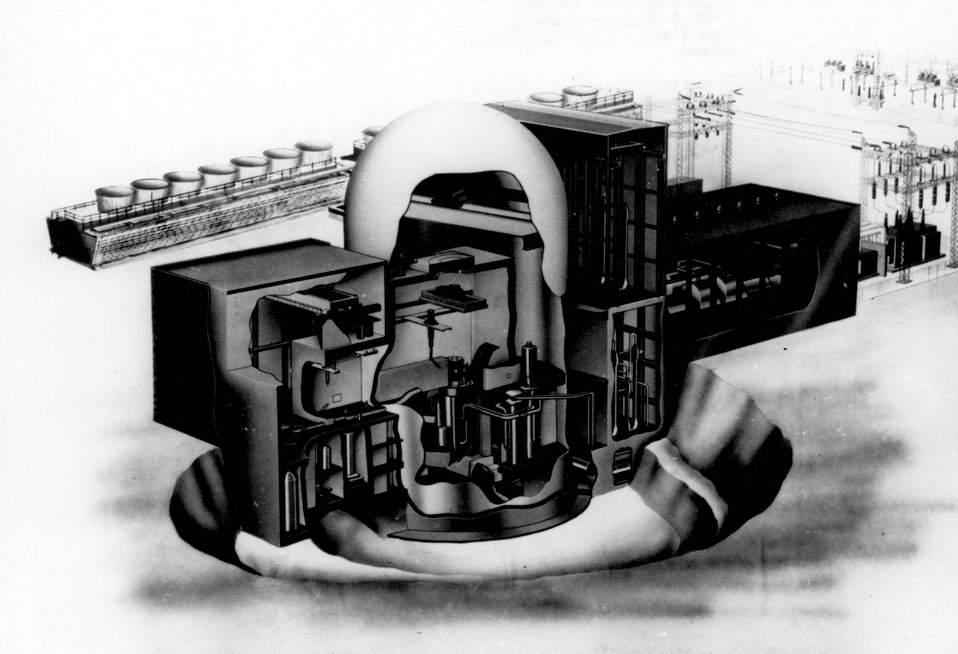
Artist's concept showing interior of the Liquid Metal Fast Breeder Reactor. c. 1974